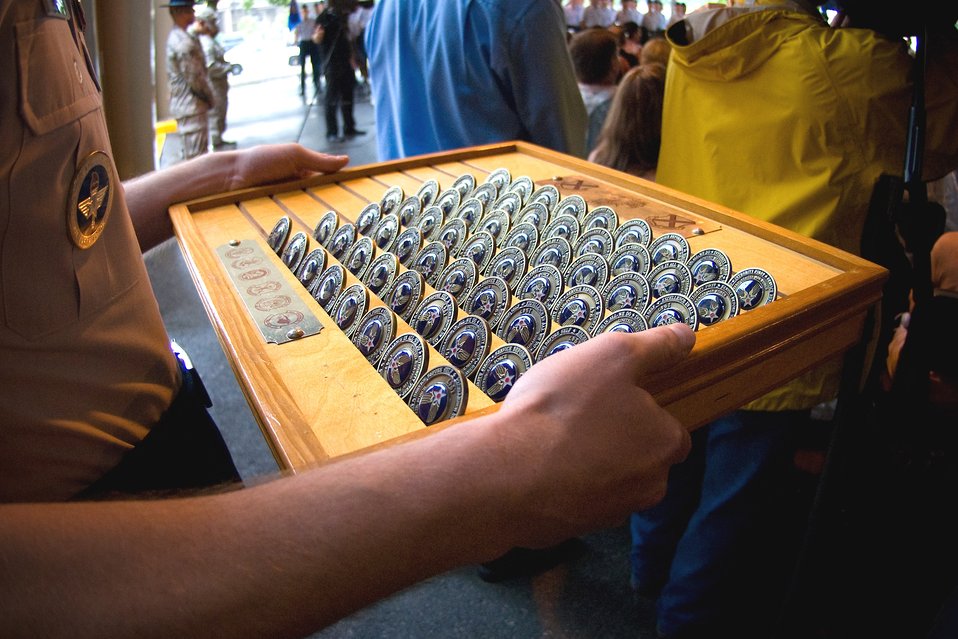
SECDEF visits Airmen, tour BMT facilities

A training instructor waits to pass out coins during a ceremony for basic training graduates at Lackland Air Force Base, Texas, July 24.